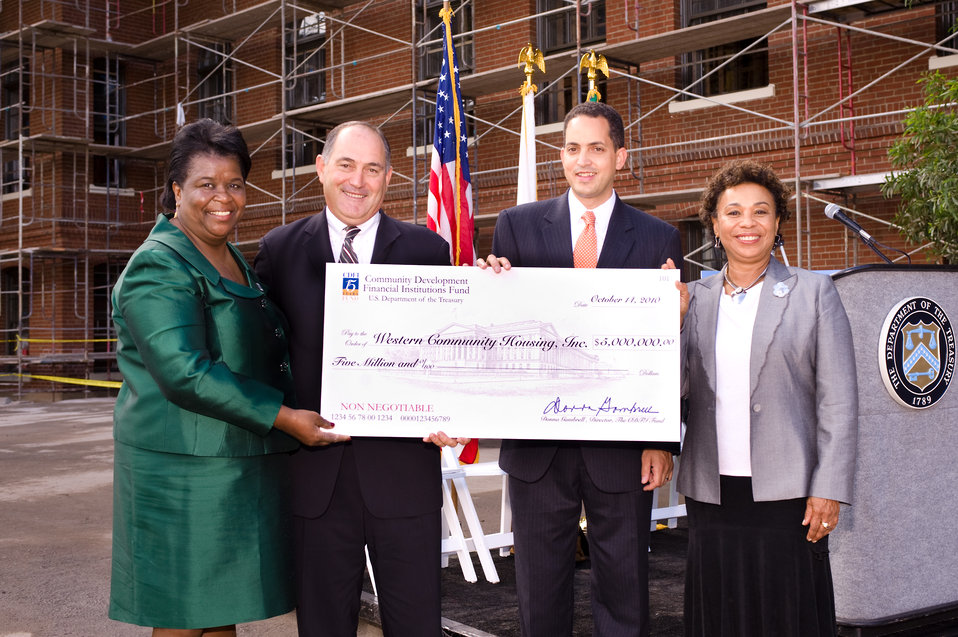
CDFI Awards for the Development of Affordable Housing in Low-Income Communities in Oakland, CA, 10/14/10

CDFI Fund Director Donna J. Gambrell, Western Community Housing President Graham Espley-Jones, Deputy Assistant Secretary Don Graves and Congresswoman Barbara Lee (CA-09) present a Capital Magnet Fund award to Western Community Housing, one of 23 Community Development Financial Institutions and nonprofit organizations that received an award for the development of affordable housing in low-income communities.